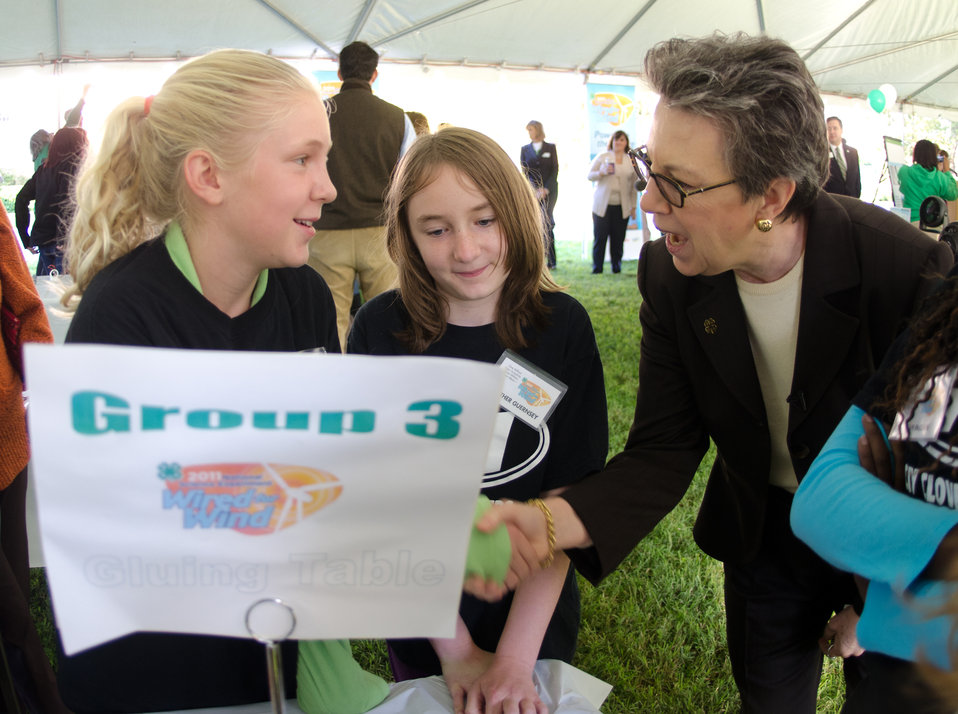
U.S. Department of Agriculture (USDA) Research, Education and Economics Under Secretary Dr. Catherine Woteki (r.), talks with two 4-H girls about wind power and the importance of what they are doing and of becoming a scientist (such as herself), an engineer or a technologists, while at the 4-H Youth Science Day event “Wired for Wind” at the National 4-H Conference Center in Chevy Chase, MD, on Wednesday, October 5, 2011.